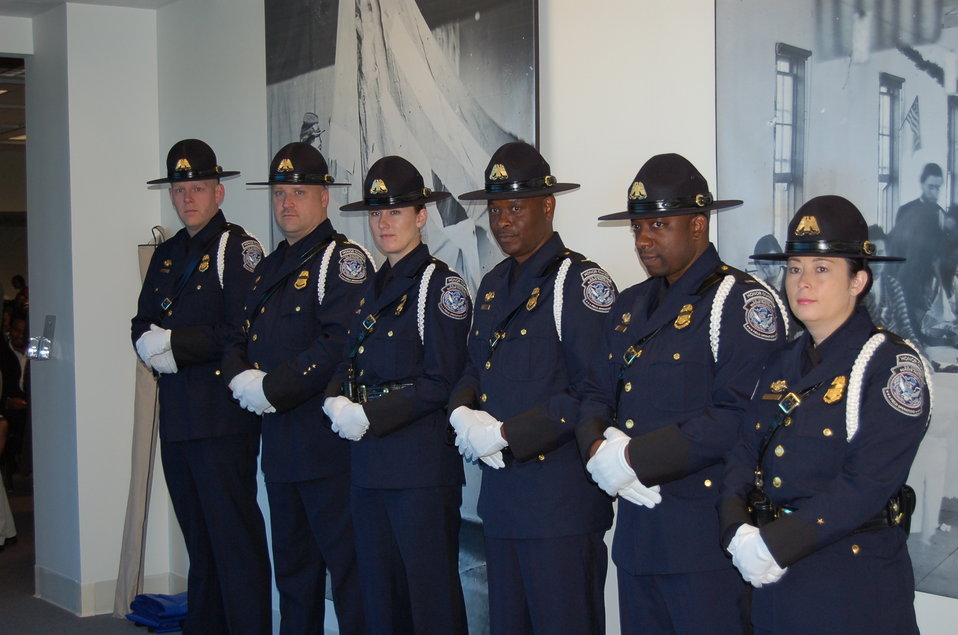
U.S. Customs and Border Protection Color Guard